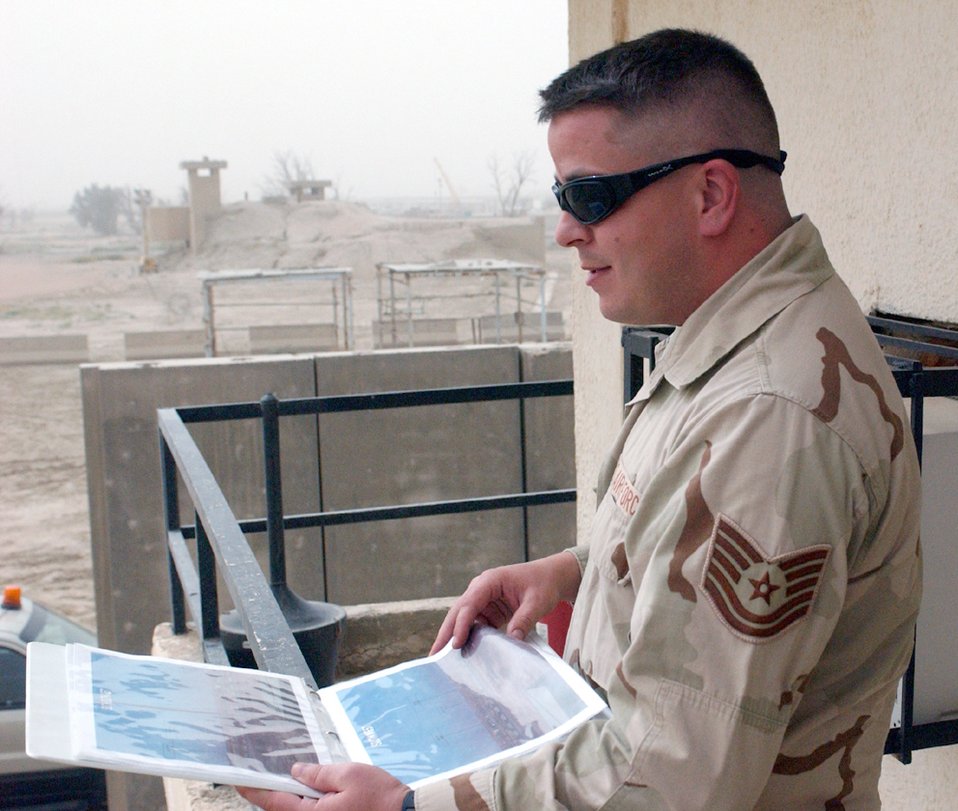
Weather-savvy Airmen assist with operational success

Tech. Sgt. Jared Ey checks visibility during a dust storm at Ali Base, Iraq, on Tuesday, May 30, 2006. Sergeant Ey is with the 407th Expeditionary Operations Support Squadron and is deployed from Hickam Air Force Base, Hawaii.